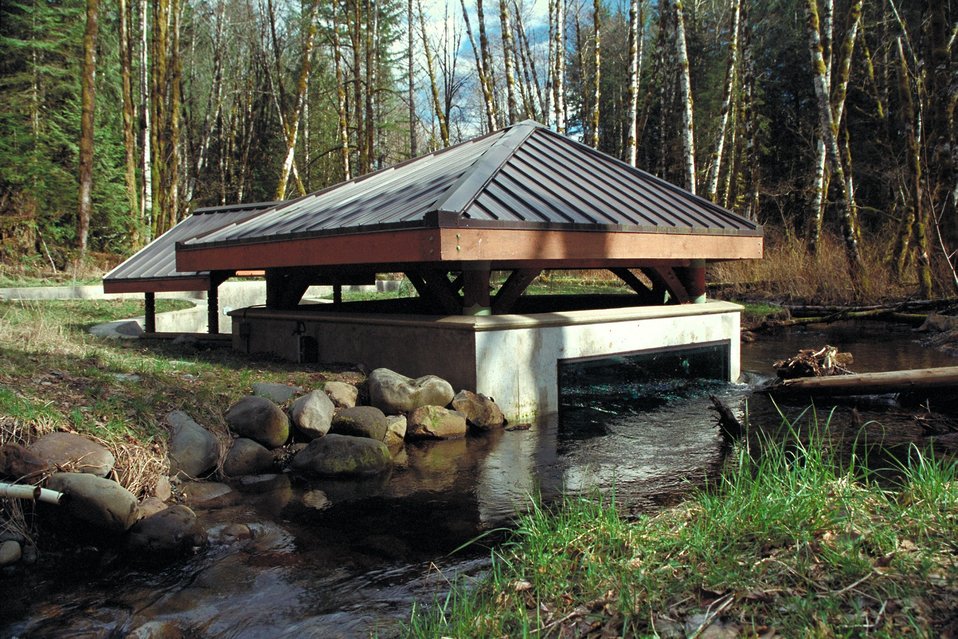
Cascade Stream Watch is an environmental education program conducted at BLM's Wildwood Recreation site.